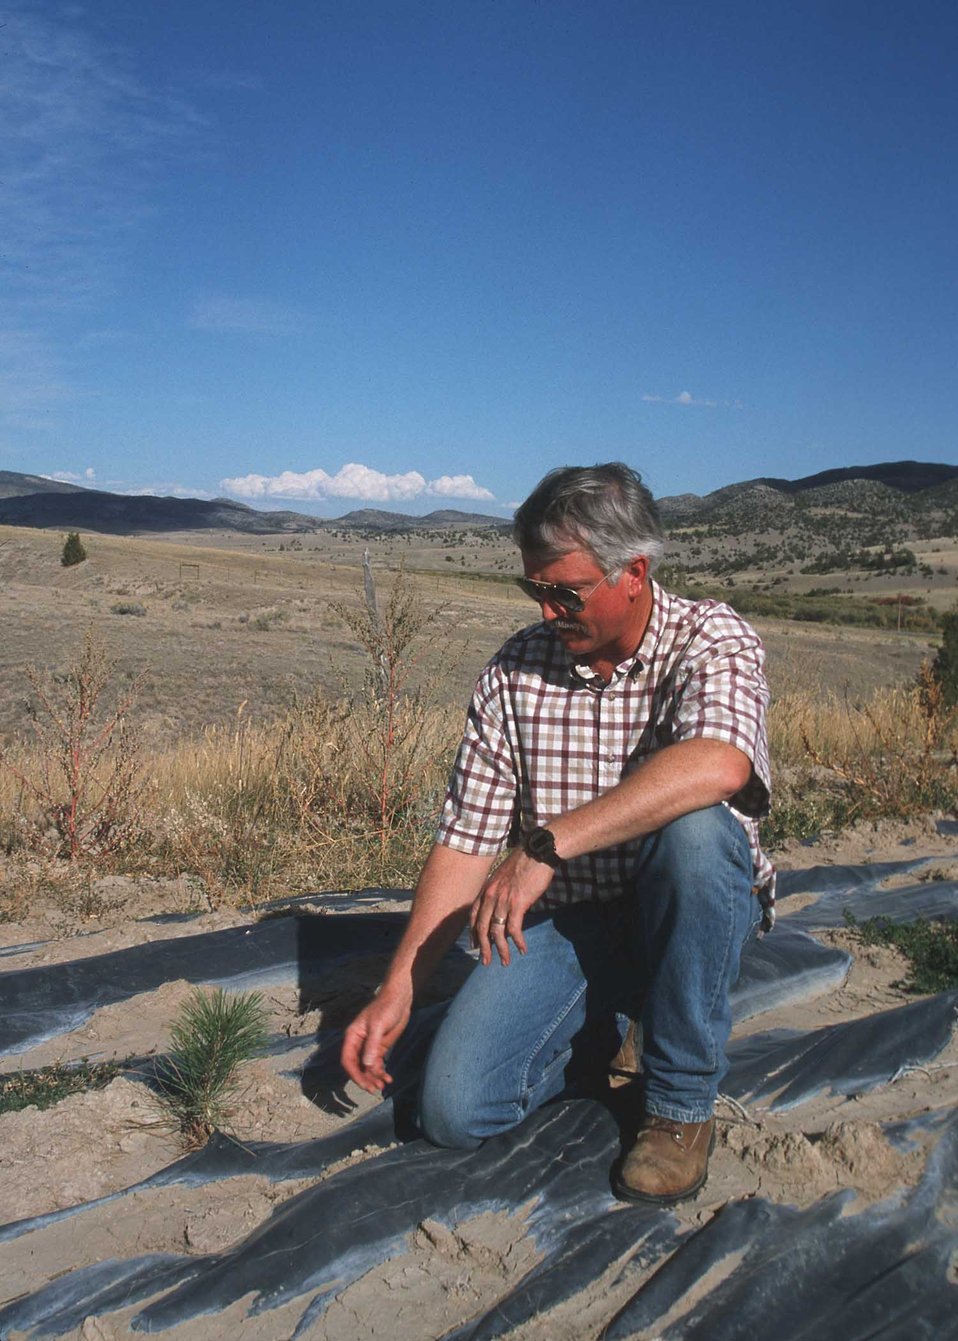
Windbreak planting in Jefferson County MT.